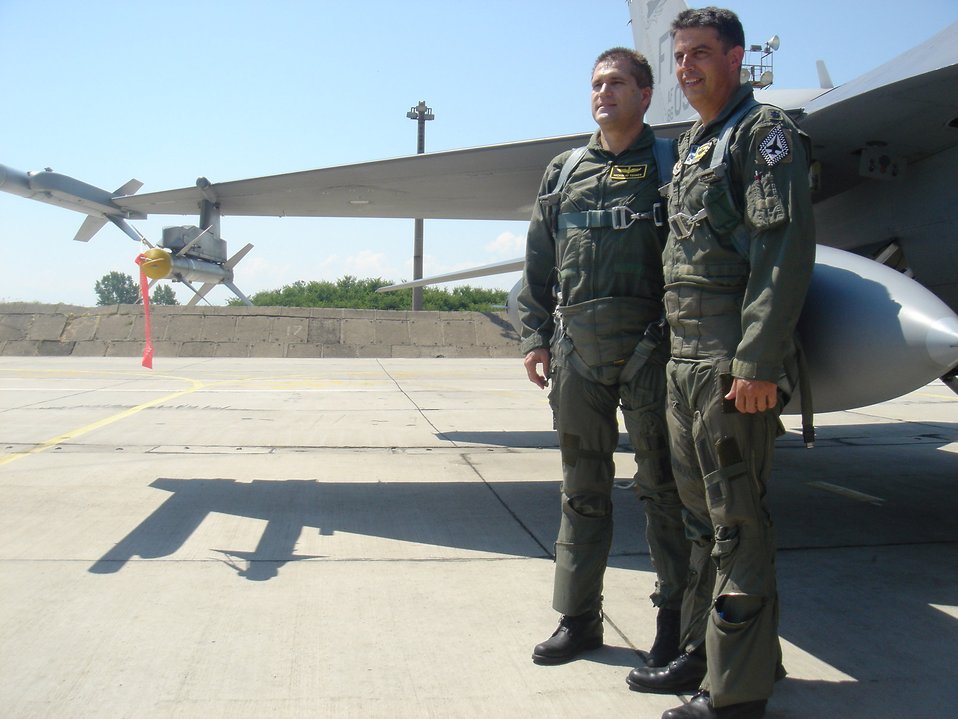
Bulgarian incentive flight

Bulgarian Defense Minister Nikolay Tsonev (left) stands with Lt. Col. Jose Monteagudo before a flight in an F-16 Fighting Falcon June 11 at Graf Ignatievo Air Base, Bulgaria. Colonel Monteagudo and 10 F-16s from the 93rd Fighter Squadron at Homestead Air Reserve Base, Fla., are at Graf Ignatievo AB to particpate in a joint drill with 15 Bulgarian MiG-21 and MiG-29 fighters. MInister Tsenov visited the base to see how the joint drill was progressing. Colonel Monteagudo is an F-16 pilot from the 482nd Fighter Wing.